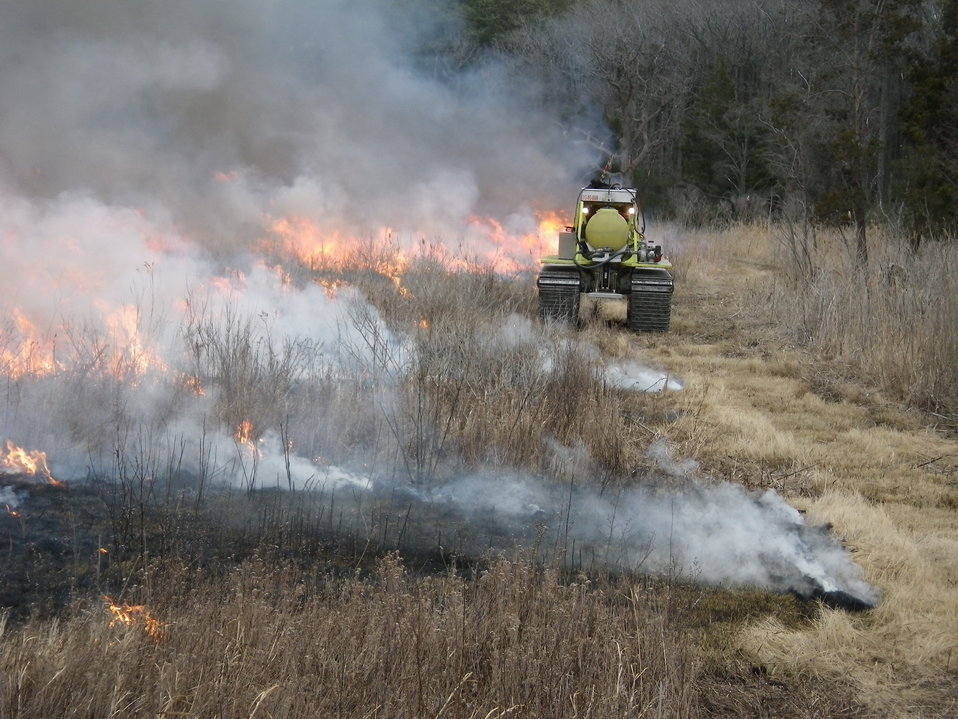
Specialized equipment helps do controlled burn

March, 2011, Eastern Neck National Wildlife Refuge, Maryland: This tracked vehicle can be used to both ignite and hold controlled burn lines. It reduces environmental impacts to brackish marshes.